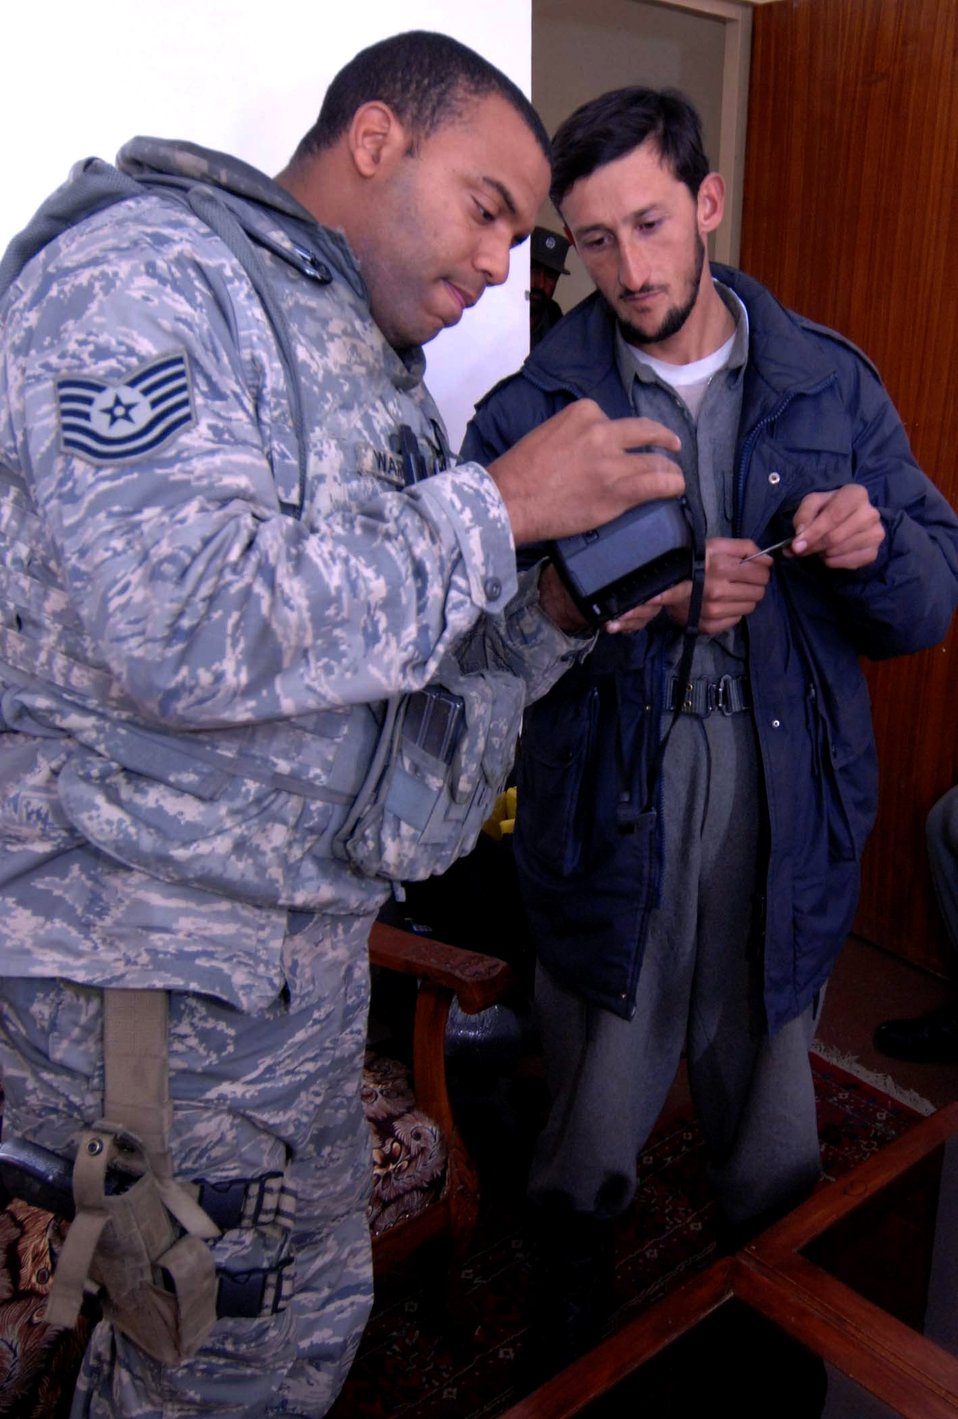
Gathering biometric data

Tech. Sgt. Francis Warren collects biometric information from a Kohistan II district Afghanistan national police noncommissioned officer Jan. 14 at Bagram Air Base, Afghanistan. The information is compiled in a database used to identify Afghans the Provincial Reconstruction Teams interact with. Sergeant Warren is deployed from Bolling Air Force Base, D.C., and is currently assigned to the Bagram Provincial Reconstruction Team.